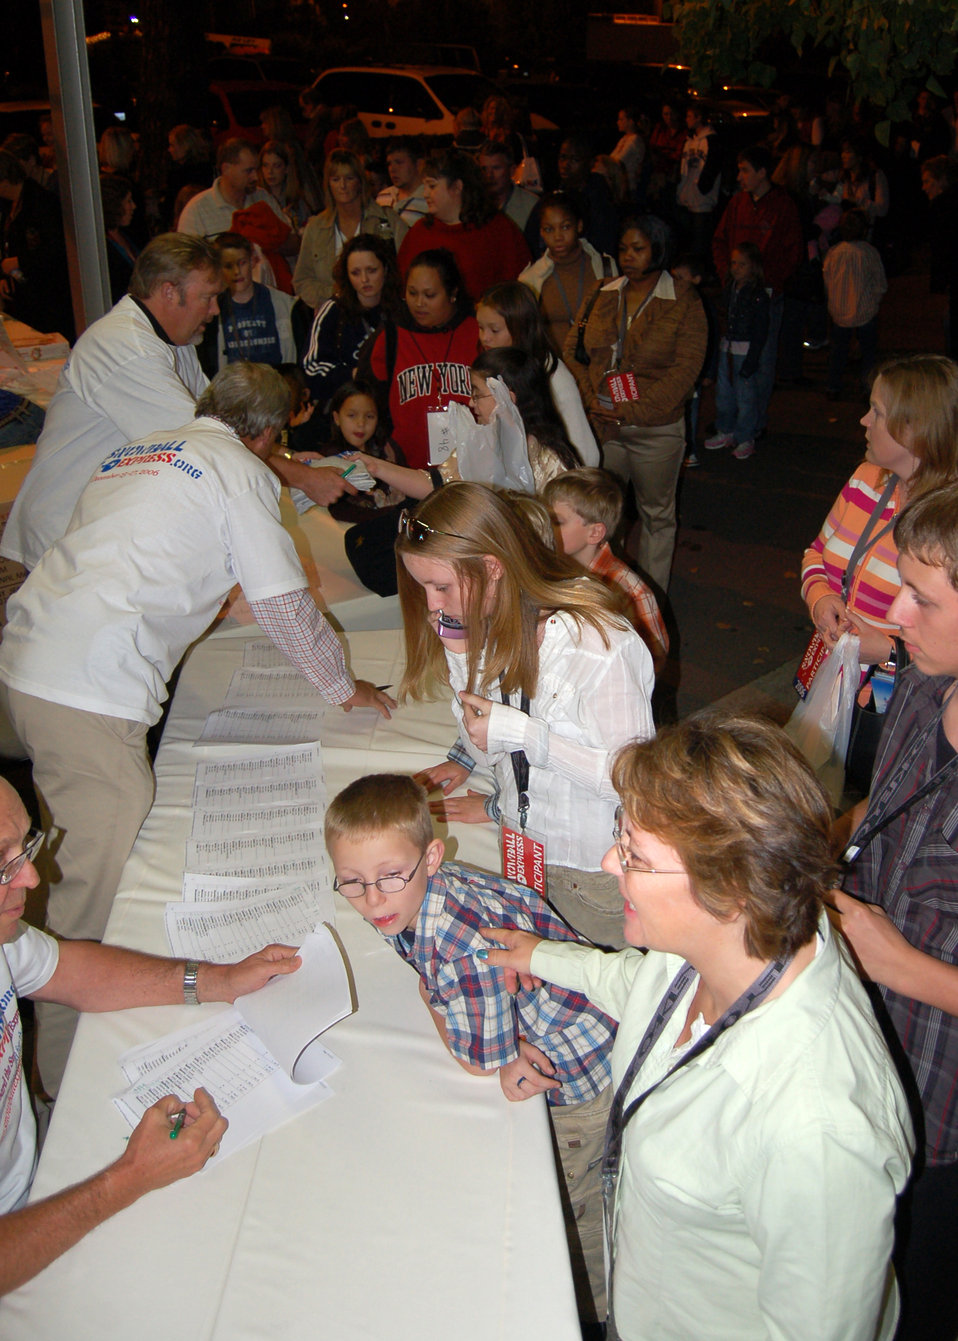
Snowball Express

Families of fallen service members line up outside the dining area of the Crystal Cathedral to sign in for the kickoff dinner for the Snowball Express. The Snowball Express is a four-day event that includes a trip to Disneyland and tickets to an Anaheim Ducks game.